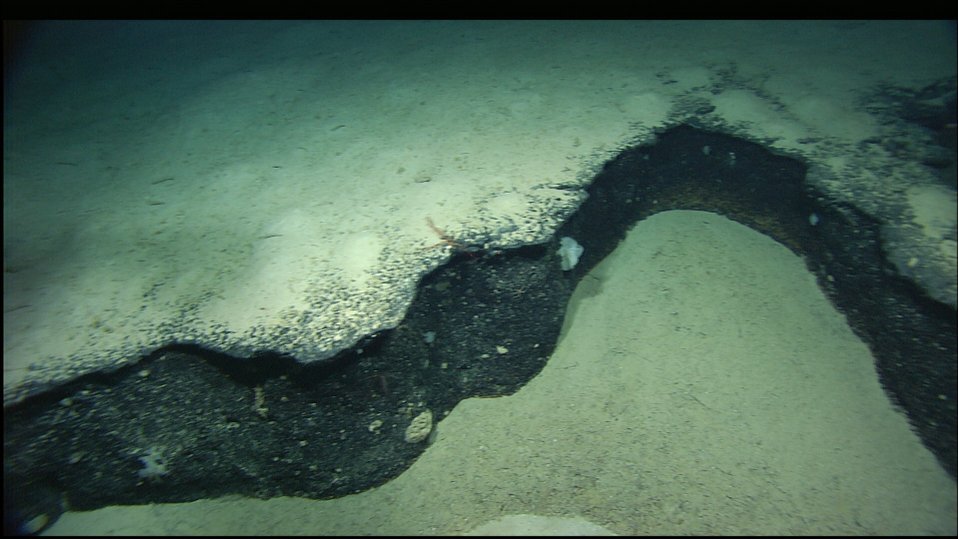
A small vertical ledge